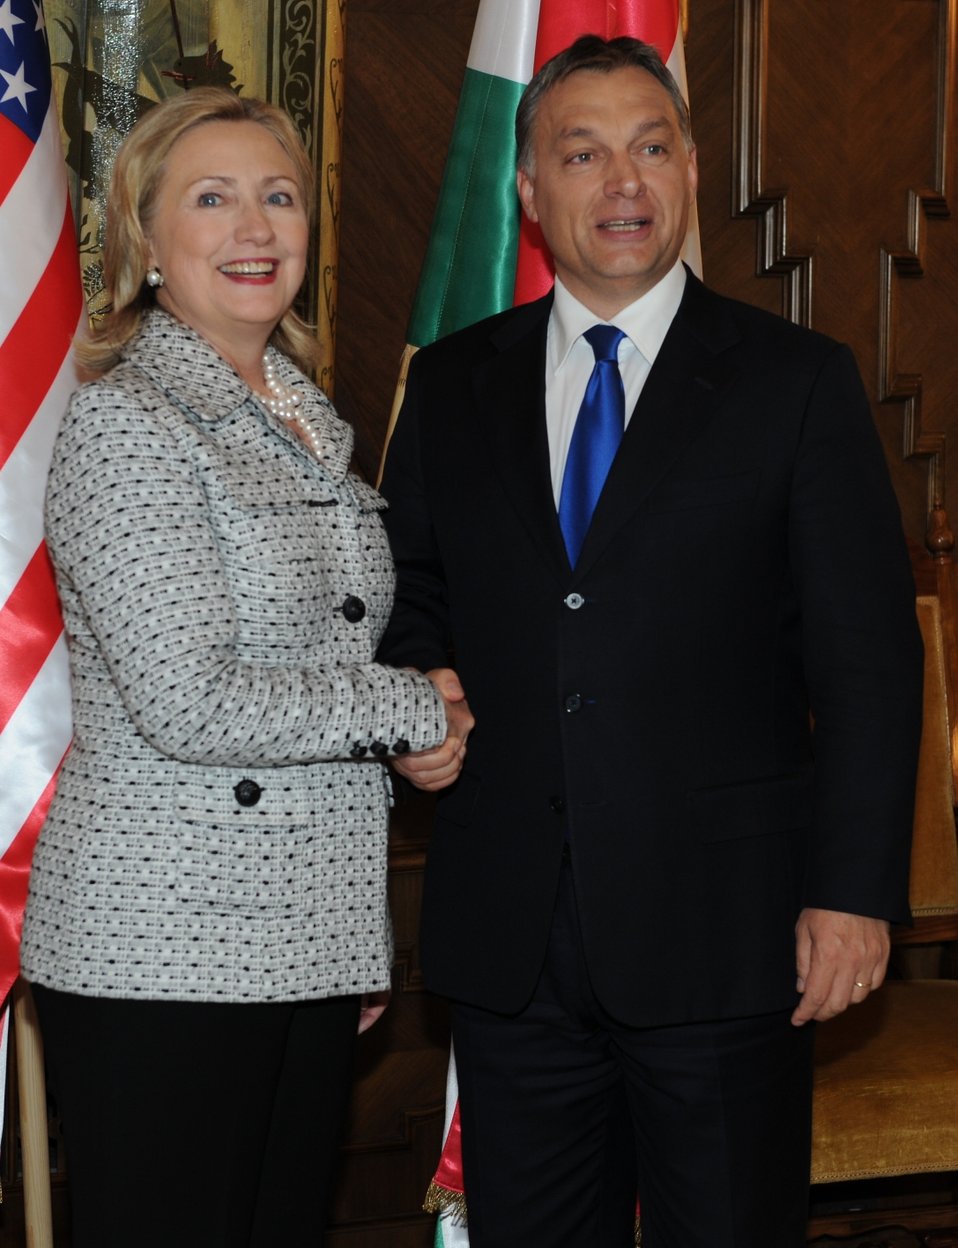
Secretary Clinton and Hungarian Prime Minister Orban Shake Hands

U.S. Secretary of State Hillary Rodham Clinton and Hungarian Prime Minister Viktor Orban shake hands before the inauguration of the Tom Lantos Institute in the Hungarian Parliament building in Budapest, Hungary, June 30, 2011.